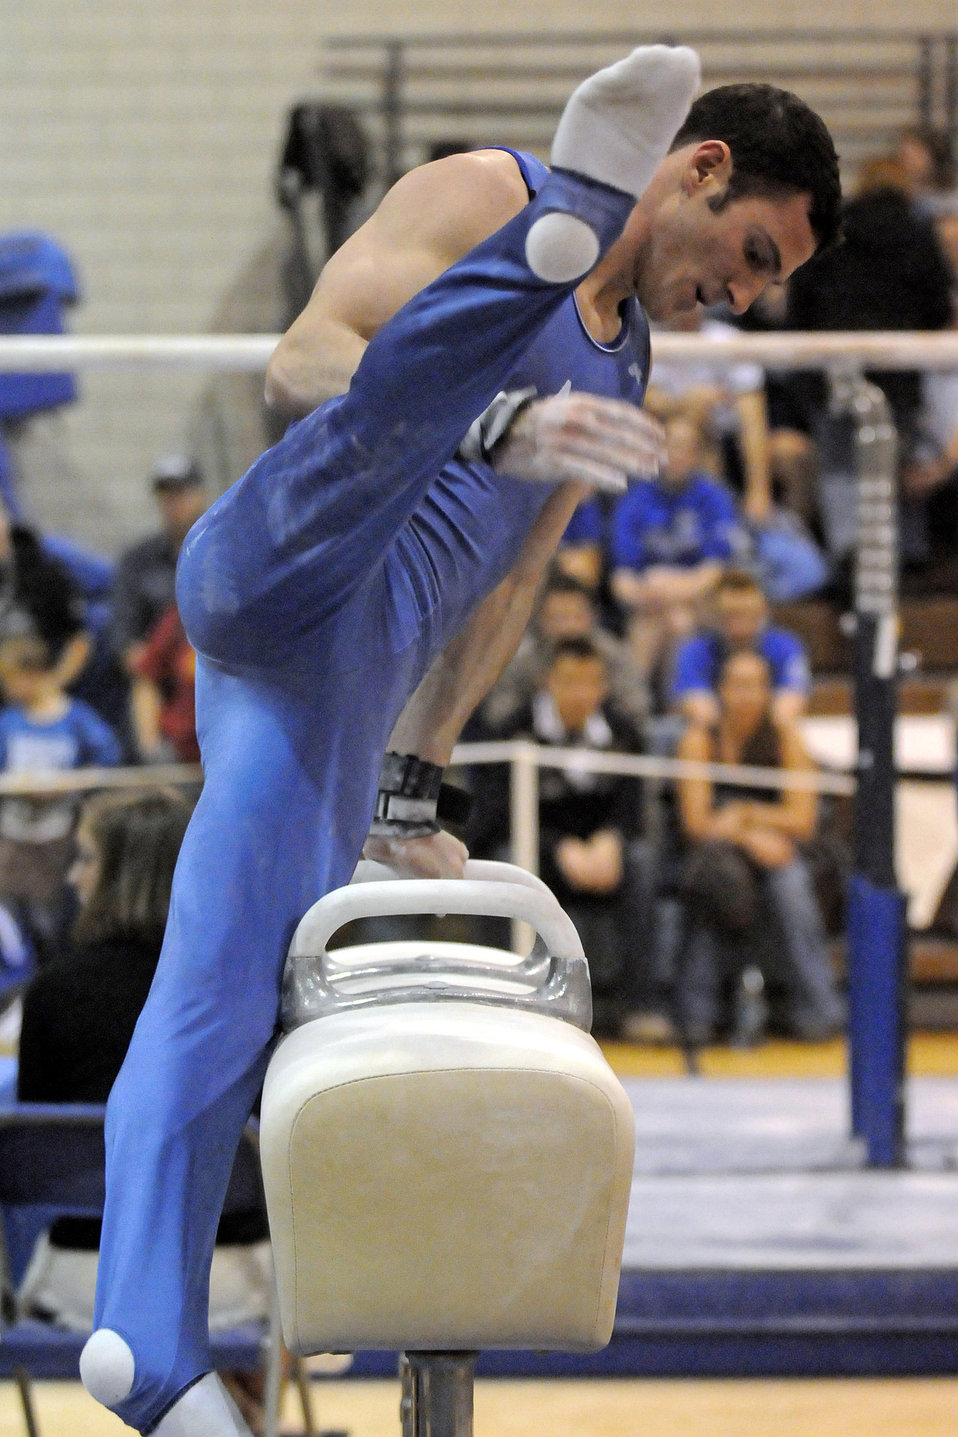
Airpower

U.S. Air Force Academy junior Garrett Canter competes on the pommel horse during the annual Rocky Mountain Open Jan. 10 at the Academy in Colorado. The Falcons accounted for seven top-10 finishes as they placed third overall in the meet in front of a capacity crowd.